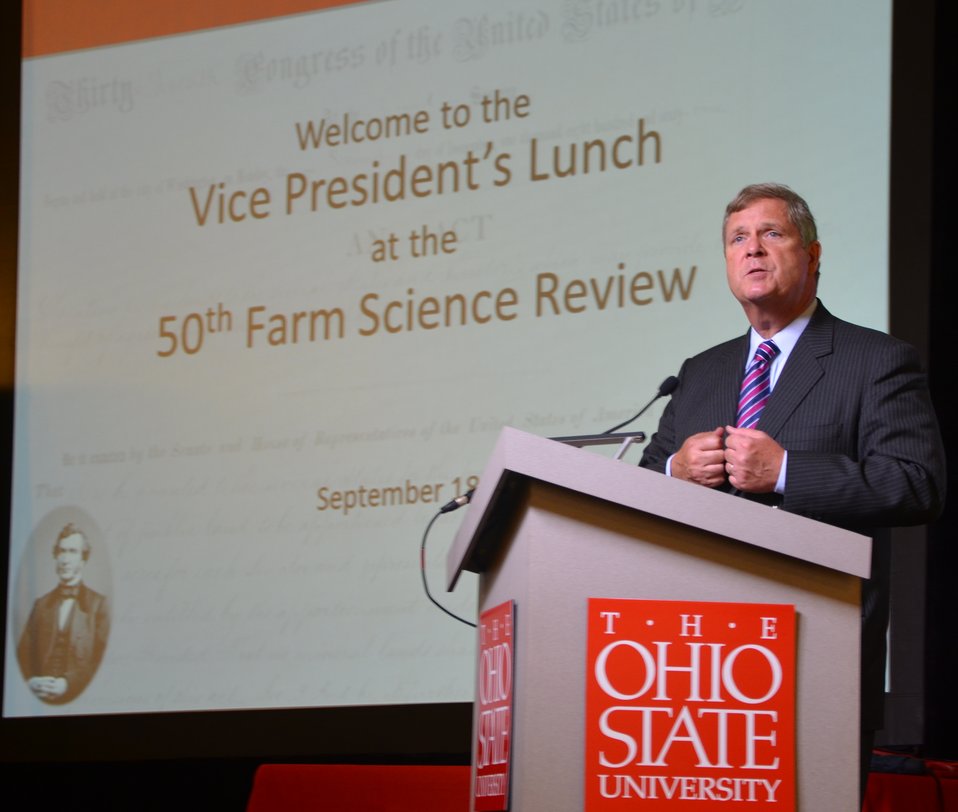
Agriculture Secretary Tom Vilsack speaking during the Vice President's Luncheon at the Farm Science Review, at Ohio State University in London, OH., on Tuesday, September 18, 2012.